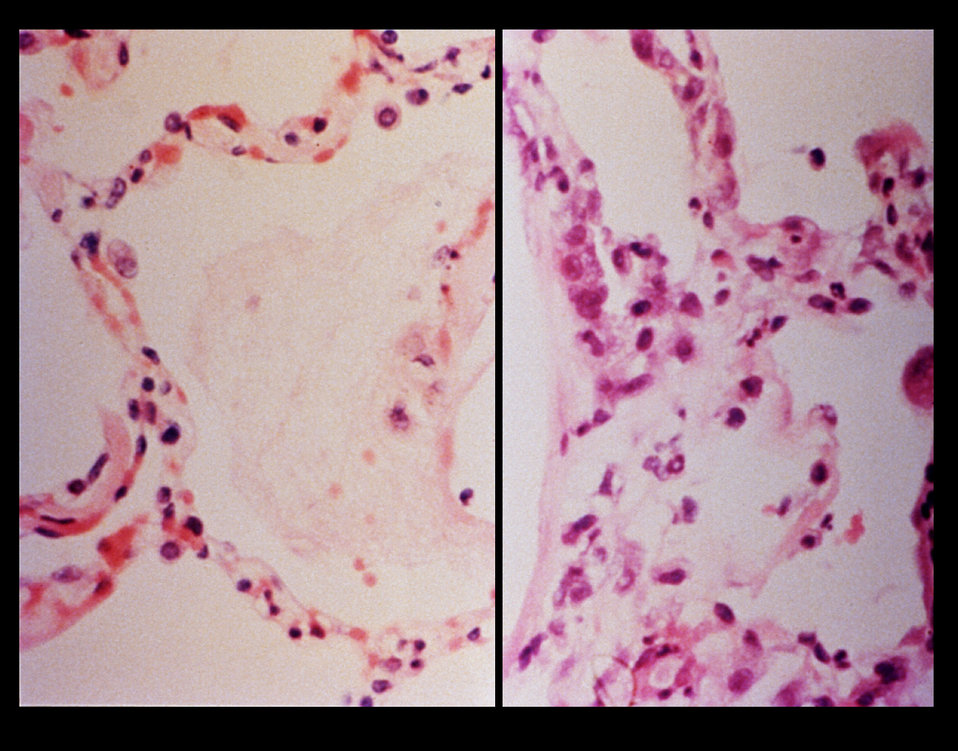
This micrograph depicts a histopathologic comparison between HPS (Rt), and ARDS (Lt).